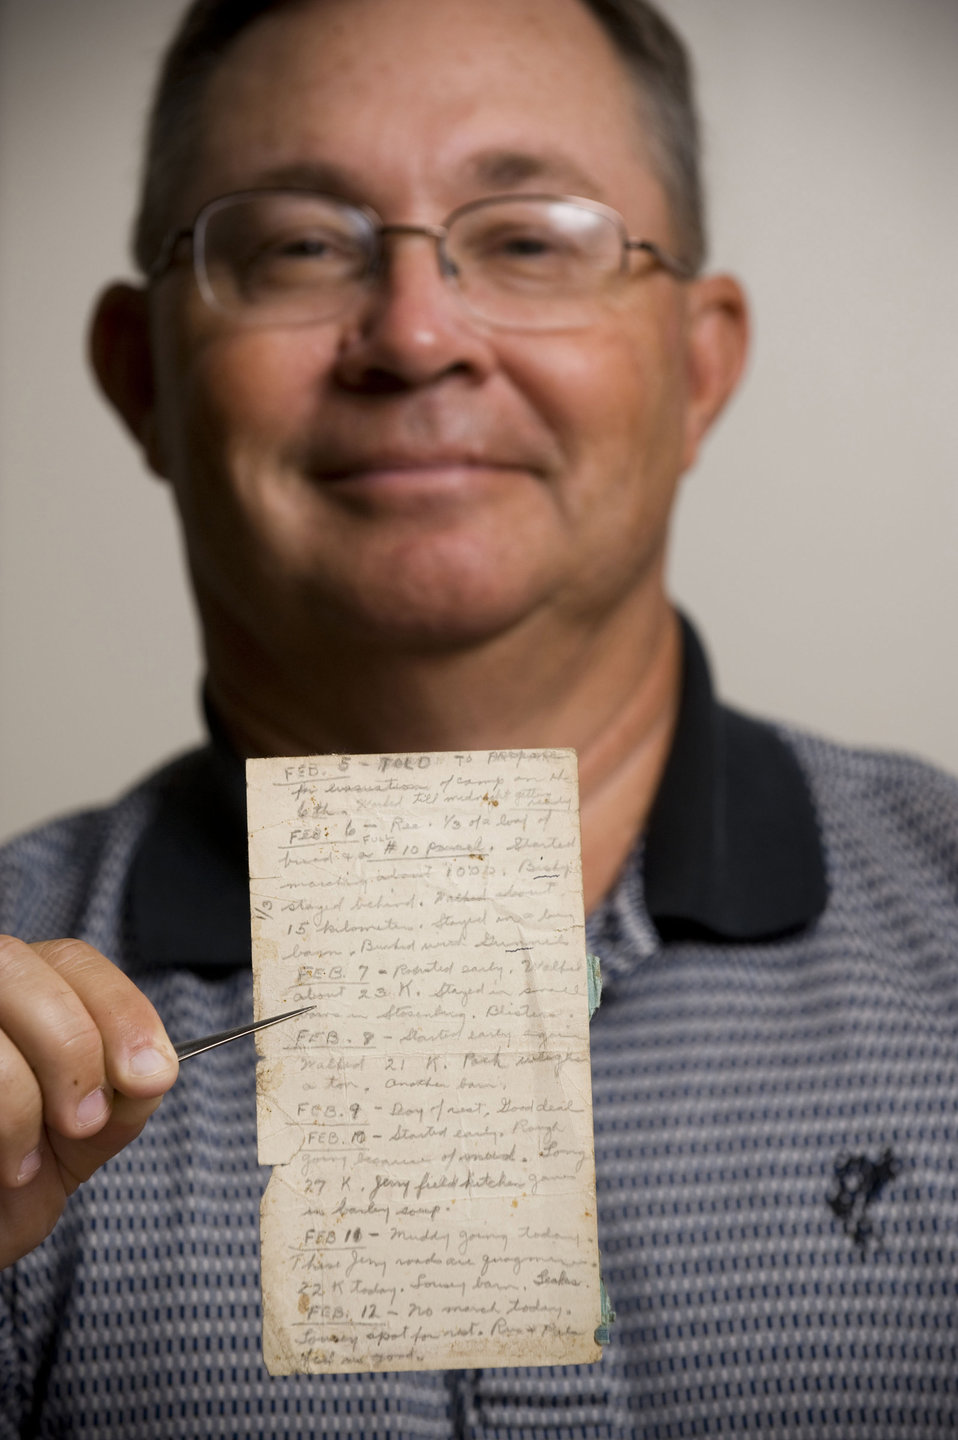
POW diaries

Retired Lt. Col. Jerry Guebard holds a diary made from cigarette packages that his father Virgil made during the latter's captivity as a prisoner of war during the German 'death' marches of World War II.